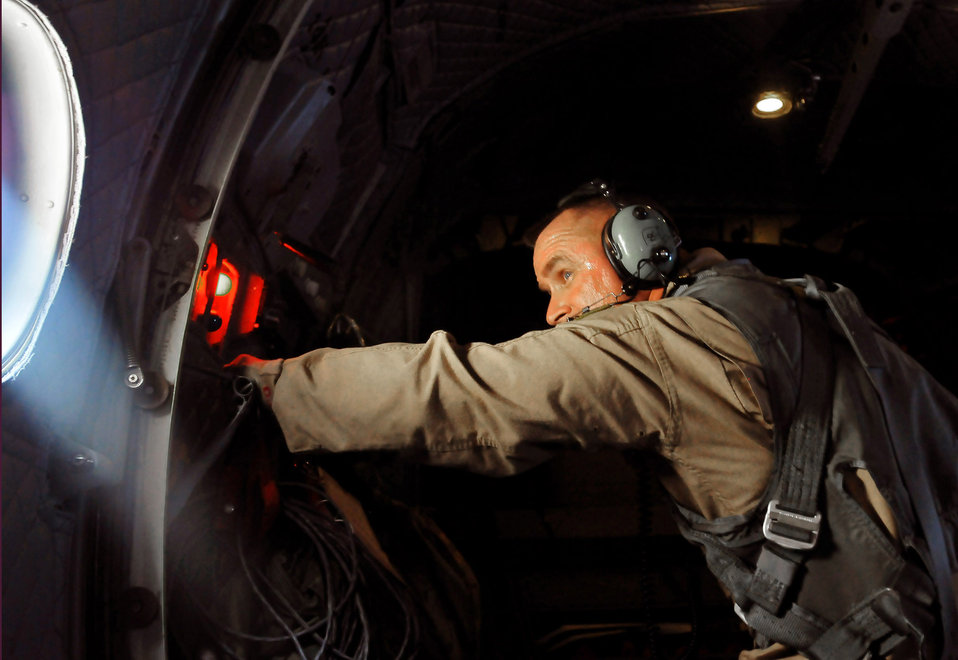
It's hot in here...

Master Sgt. Chris Ringland prepares to launch cargo from the back of a C-27 Spartan during an air drop July 1, 2010, near Kabul, Afghanistan. This is the first air drop in Afghanistan conducted by a C-27 crew. Sergeant Ringland is a loadmaster with the 438th Air Expeditionary Advisory Group.